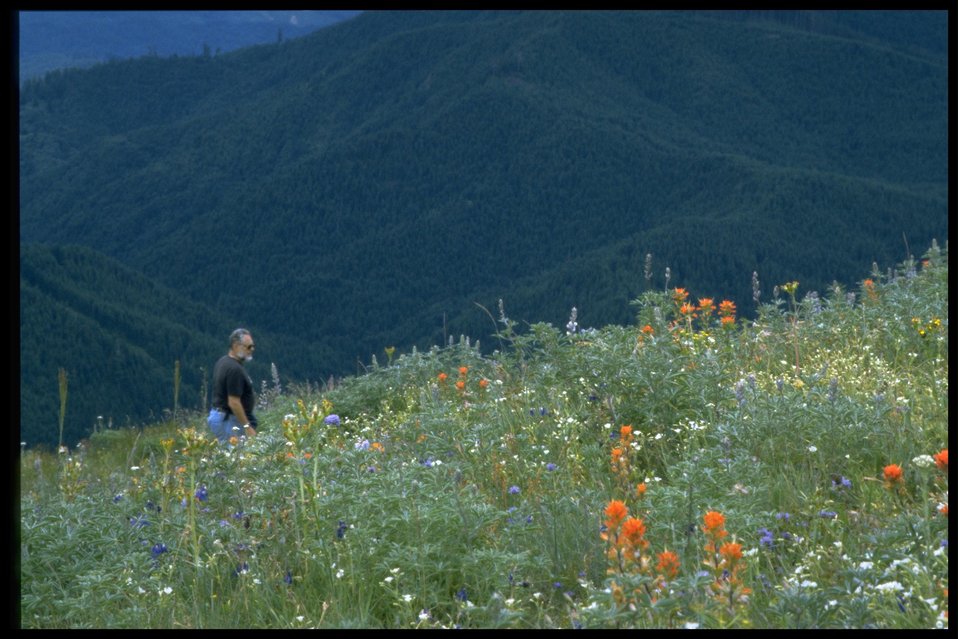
Meadow, wildflowers, scenic view from Mary's Peak.